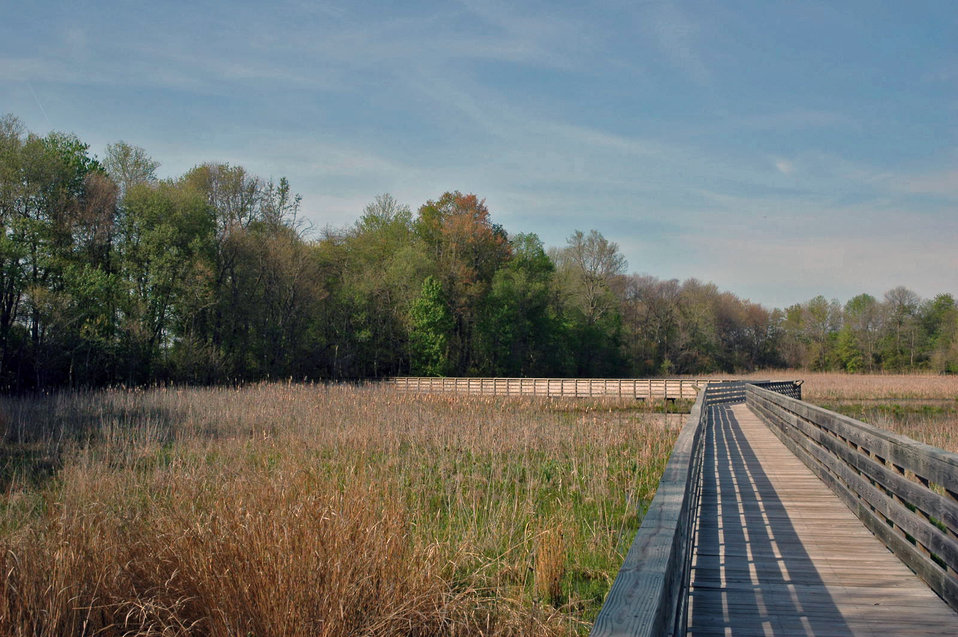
Boardwalk trail at Prime Hook National Wildlife Refuge.